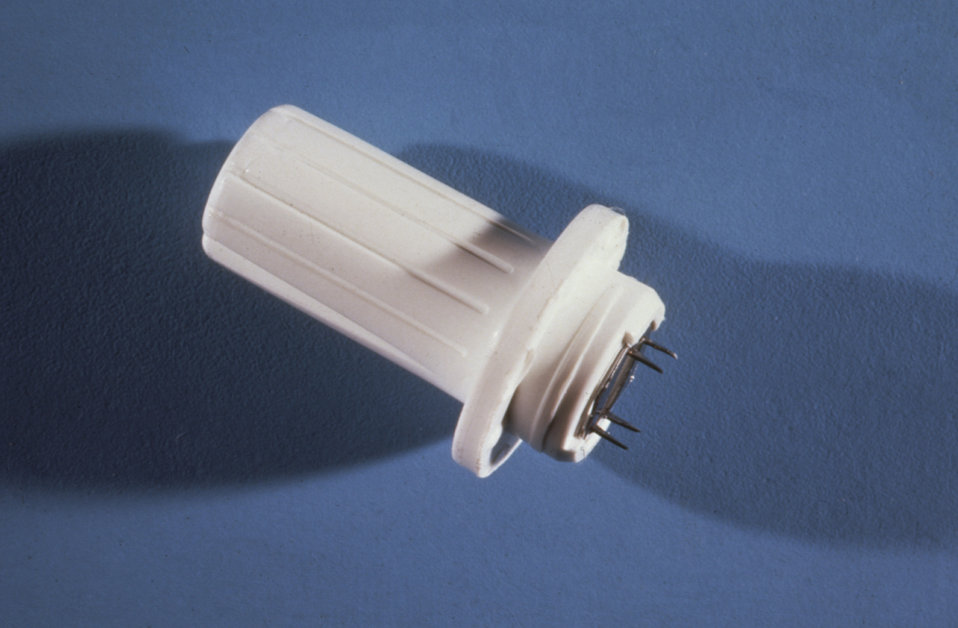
This is a photograph of a four prong instrument used to administer the Tuberculin Tine Test.